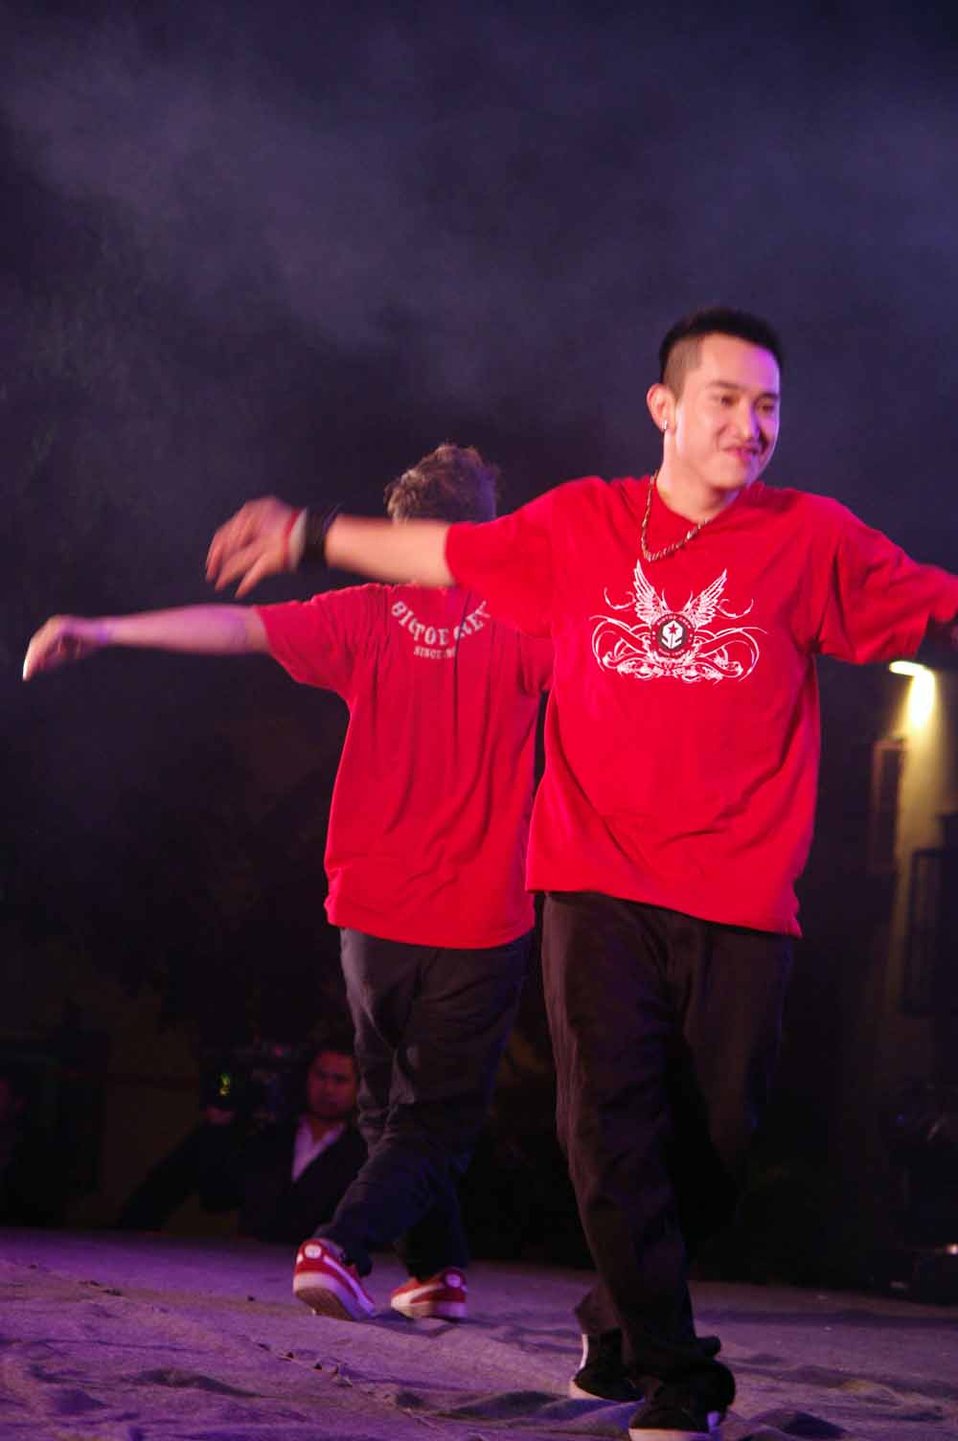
dance4life, Hanoi